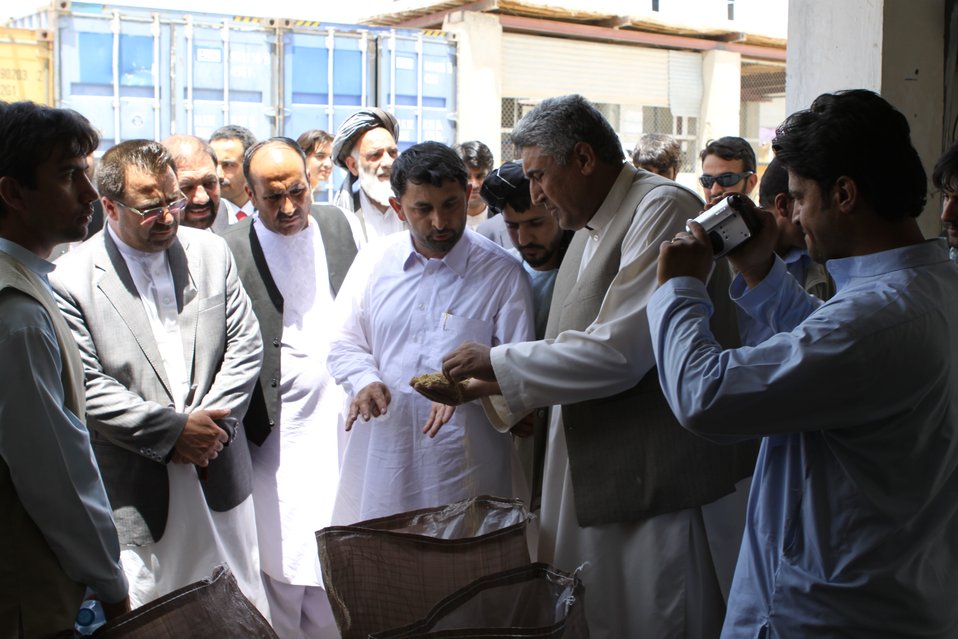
Bolan Poultry Farm